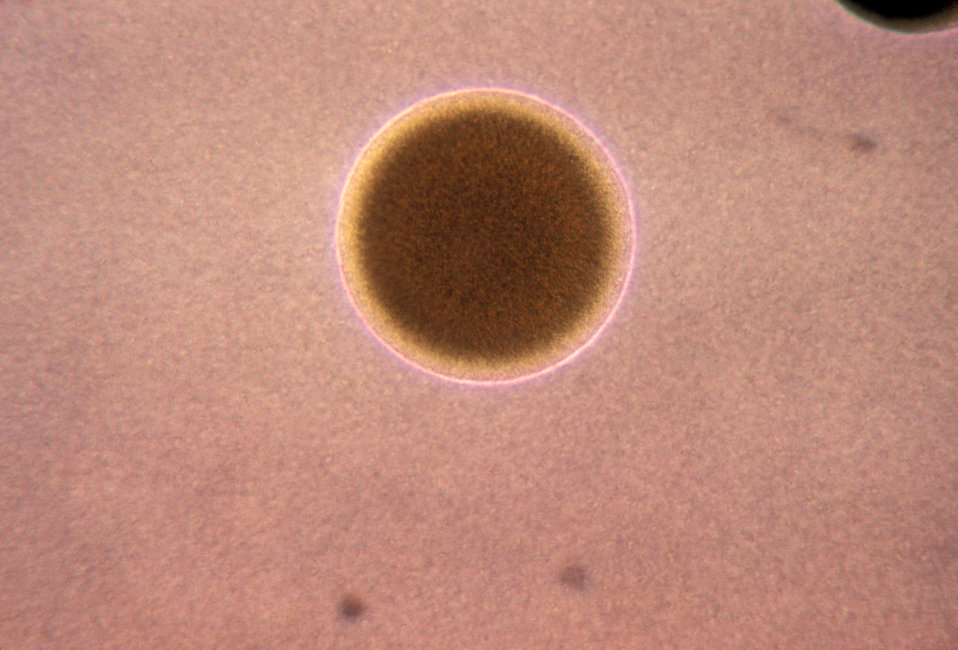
This is a photomicrograph of a T1 colony of Neisseria gonorrhoeae bacteria; Magnified 100X.